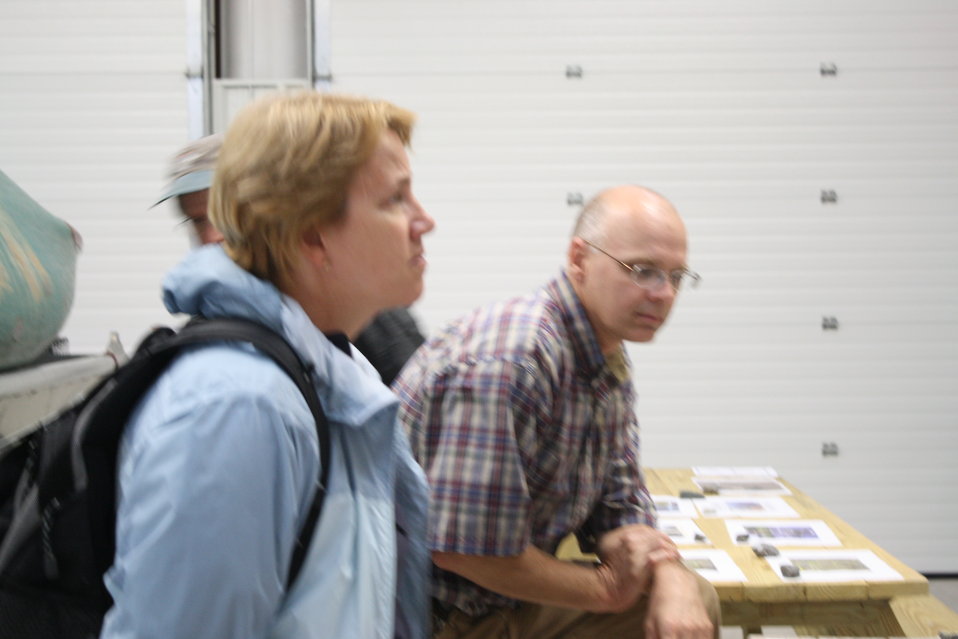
Nashua National Fish Hatchery welcomes regional office employees

Viewing the Hatchery.